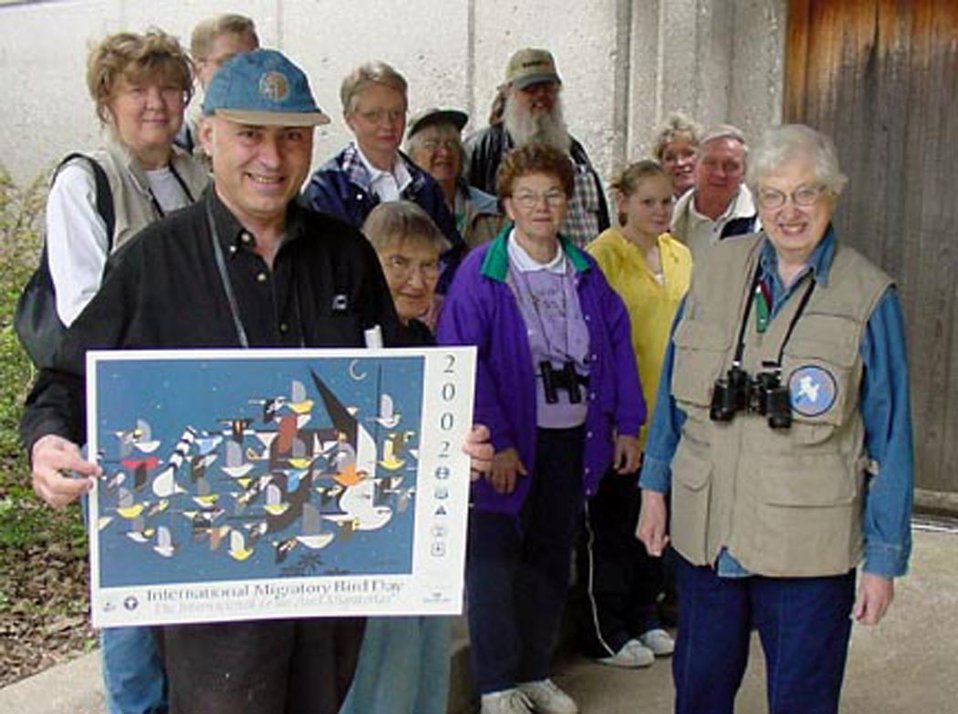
2002 International Migratory Bird Day Posters

International Migratory Bird Day